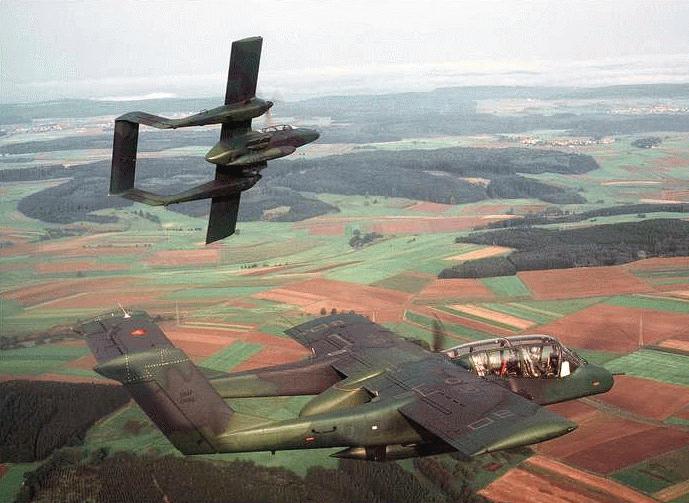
Bucking Broncos

As part of its Air Bridge Denial Program, the Colombian Air Force has several U.S.-provided OV-10 Bronco aircraft it uses to force or shoot down illegal flights that are either entering or exiting the country.